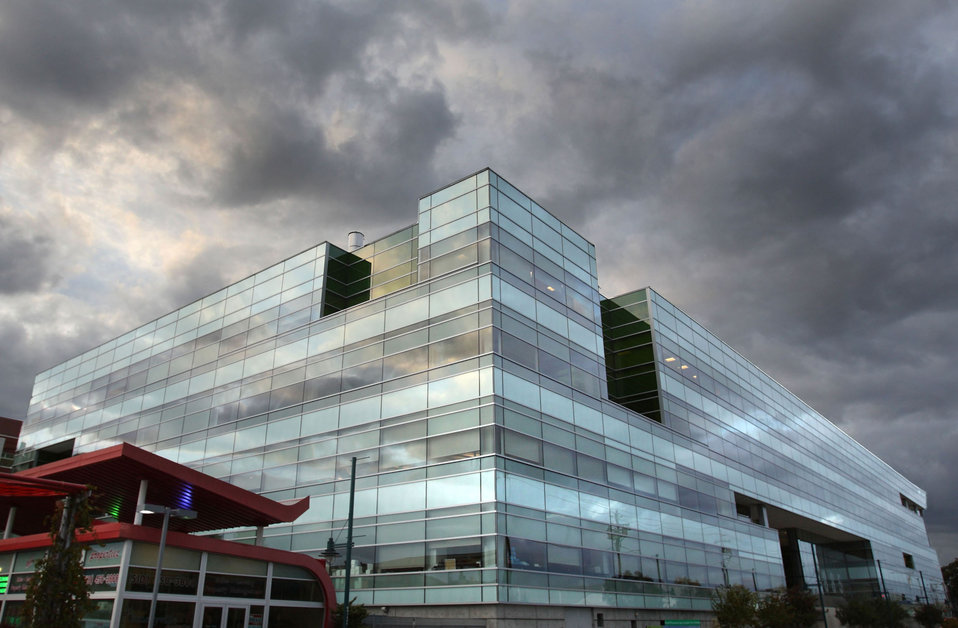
The Joint Bioenergy Institute is located in Emeryville, CA. It occupies 65,000 square feet of space in the 245,000 square-foot building.

The new center led by Lawrence Berkeley National Laboratory, University of California campuses in Berkeley and Davis, and Stanford University. Research at the DOE JBEI will focus on biofuels-liquids derived from the solar energy stored in plant biomass. Harnessing even a light fraction of the total solar energy available each year could meet most if not all of the nation's annual transportation energy needs. The other two DOE BioEnergy Research Centers are the DOE BioEnergy Research Center led by Oak Ridge National Laboratory and the DOE Great Lakes BioEnergy Research Center led by University of Wisconsin in Madison, Wisconsin in close collaboration with Michigan State University in East Lansing, Michigan.